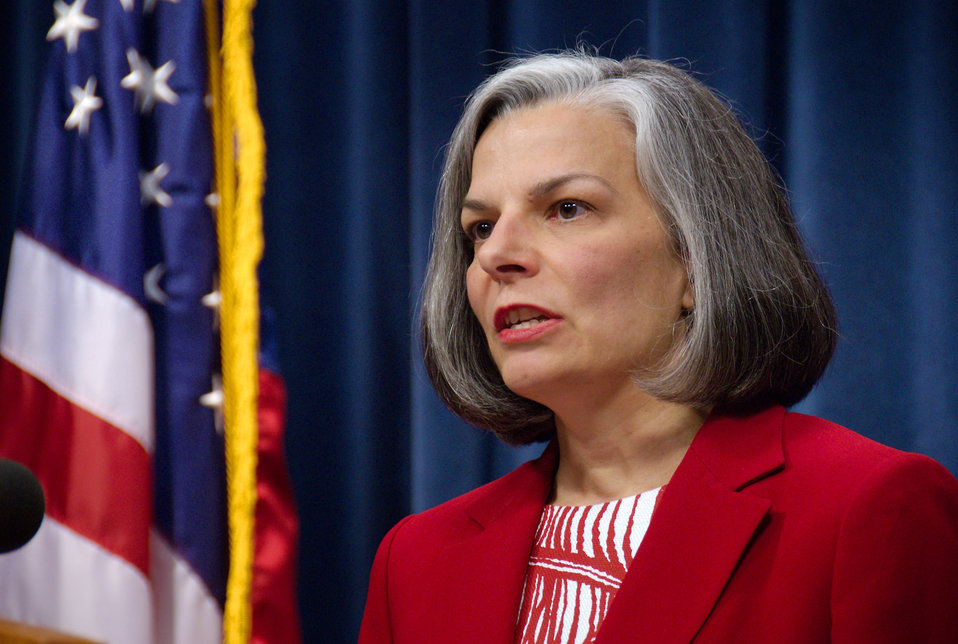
This 2007 image depicted former Centers for Disease Control Director (2002 - 2008), Dr. Julie Gerberding, conducting a press briefing regarding the organization's public health investigation into who may have been exposed to an extensively drug-resistant tuberculosis (XDR-TB) infected person. The information release included the action and steps that the CDC was taking in response to a case of XDR-TB in a United States citizen who'd undertaken international travel. XDR-TB is a recently defined subtype of a multi-drug resistant TB, which can cause severe illness and death.